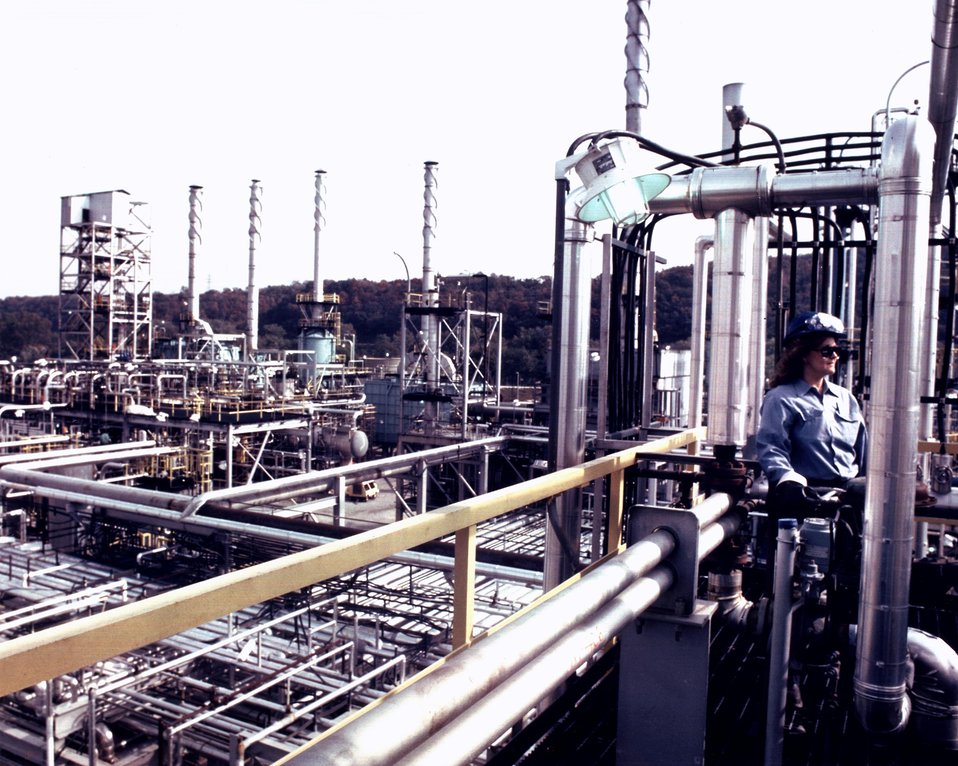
CONSTRUCTION PROGRESS AT H-COAL PILOT PLANT.